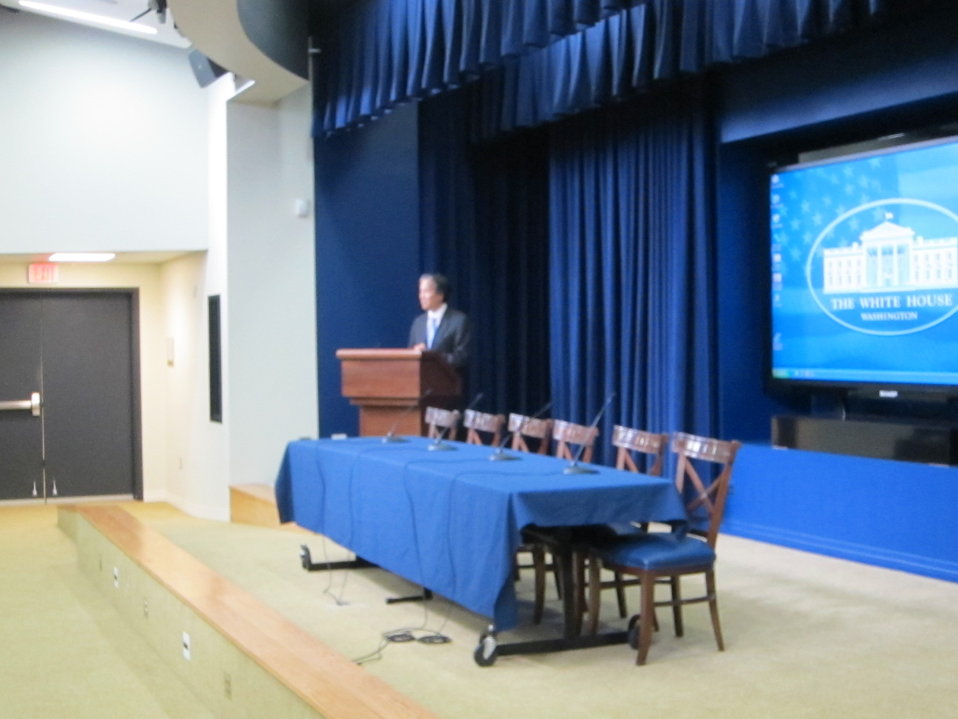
WH 2012 World Hepatitis Day Event